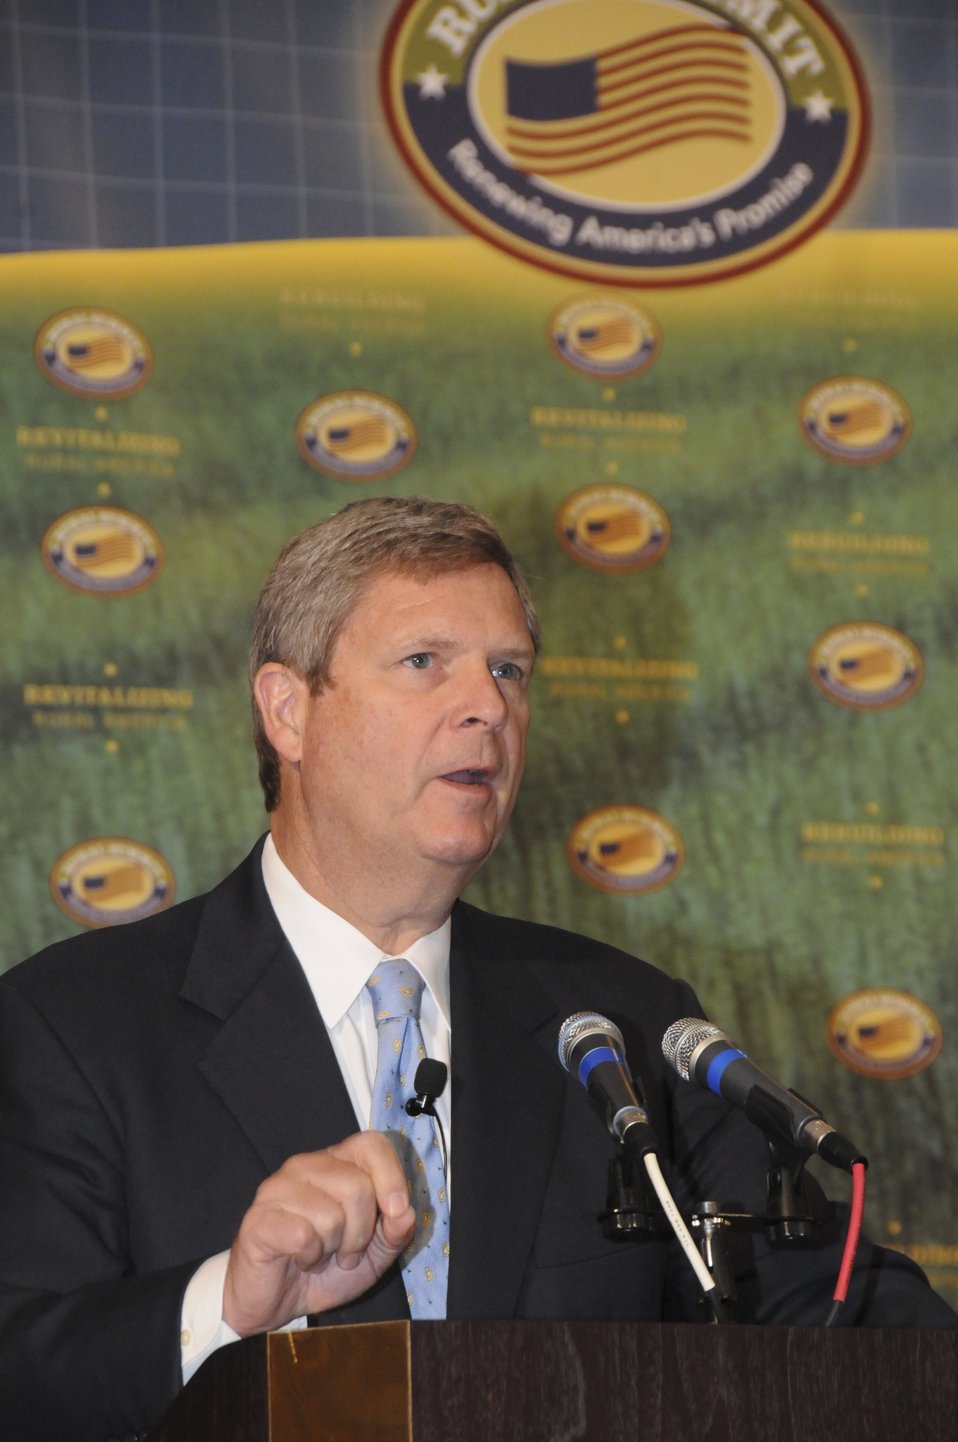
Agriculture Secretary Tom Vilsack speaks at the opening session of the National Rural Summit held at Jefferson College in Hillsboro, MO., on Thursday, June 3, 2010. USDA photo 10di1386-88